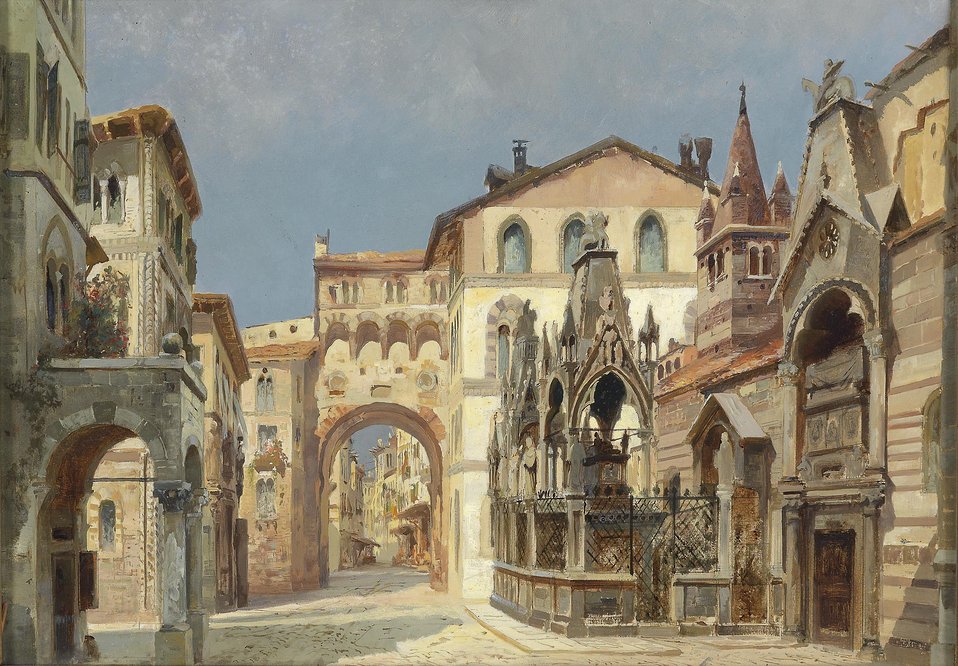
Anton Brioschi Scagliergräber in Verona